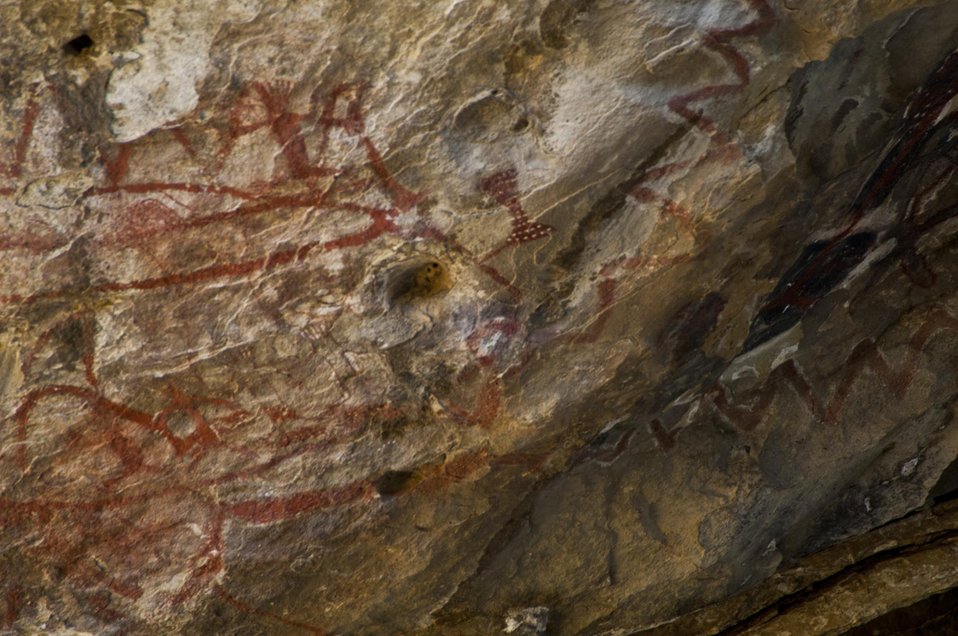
Pictograph at Painted Rock, Carrizo Plain 4